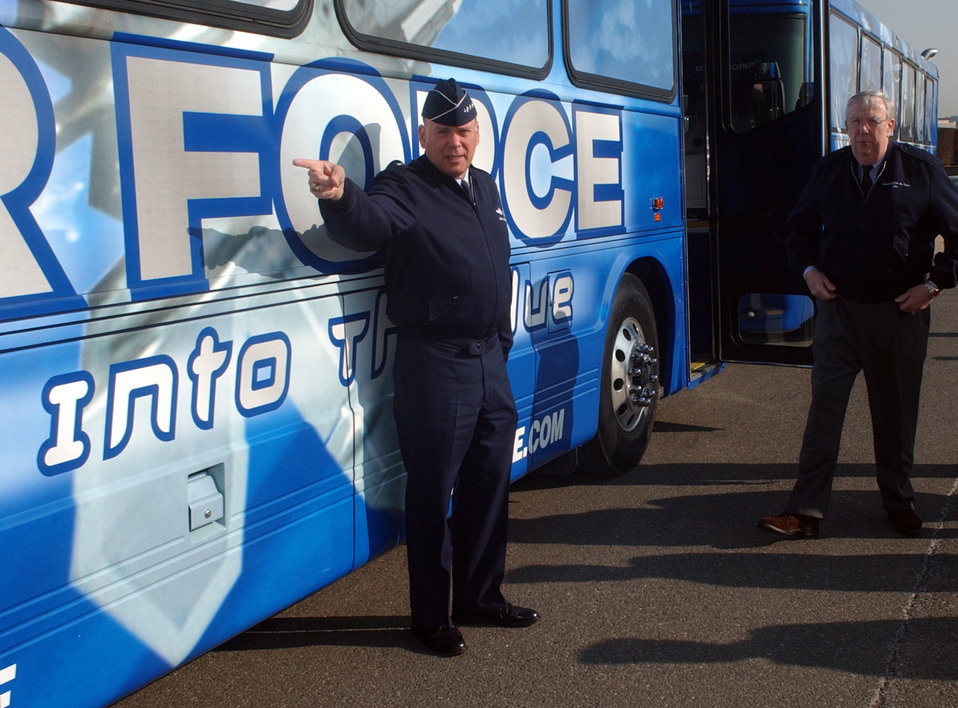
New bus design

WASHINGTON -- Air Force Chief of Staff Gen. John P. Jumper and Secretary of the Air Force Dr. James G. Roche inspect the new bus design scheme at the Pentagon on Feb. 19. The new graphic design on the buses reflects the mission of the Air Force and demonstrates the diversity of careers in today's Air Force. There are a total of 10 buses in this test program. Four will operate from Bolling Air Force Base, D.C., and the other six will be at Randolph AFB, Texas; the U.S. Air Force Academy, Colo.; and Nellis AFB, Nev.